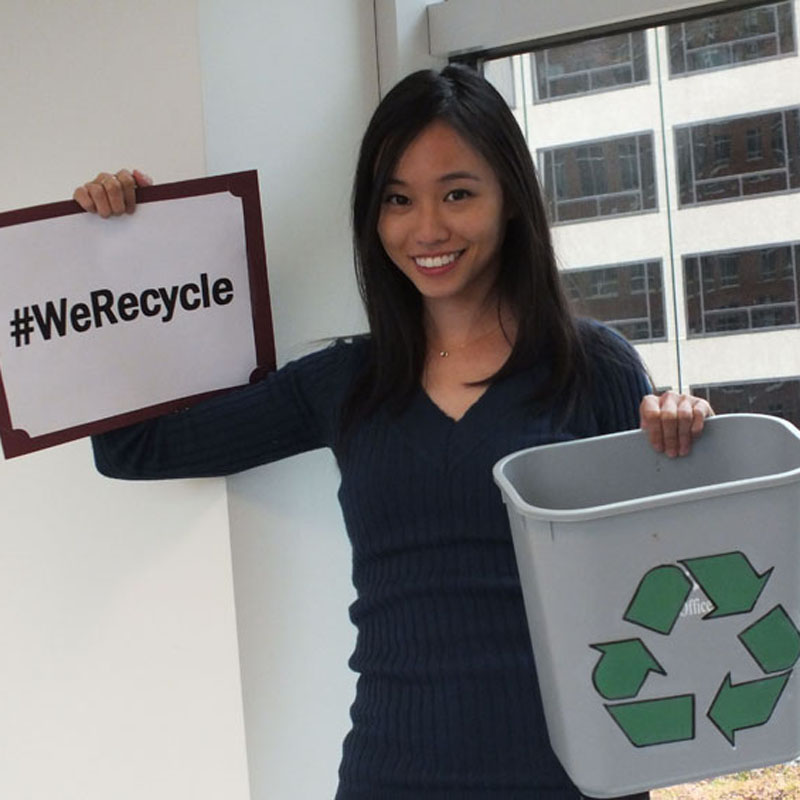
EPA Employee Felicia Recycles

At EPA, #WeRecycle. Learn how you can too: www2.epa.gov/recycle